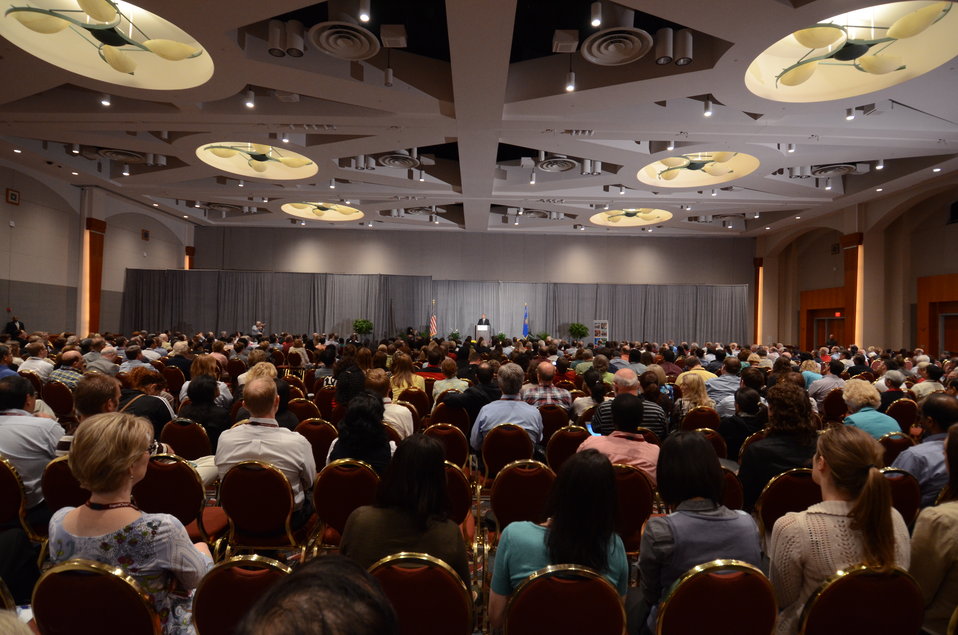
Agriculture Secretary Tom Vilsack speaks at the International Association for Food Protection (IAPP) 100th annual meeting in Milwaukee, WI, on Wednesday, August 3, 2011. IAPP is committed to providing members worldwide with a forum to exchange information on protecting the global food supply.